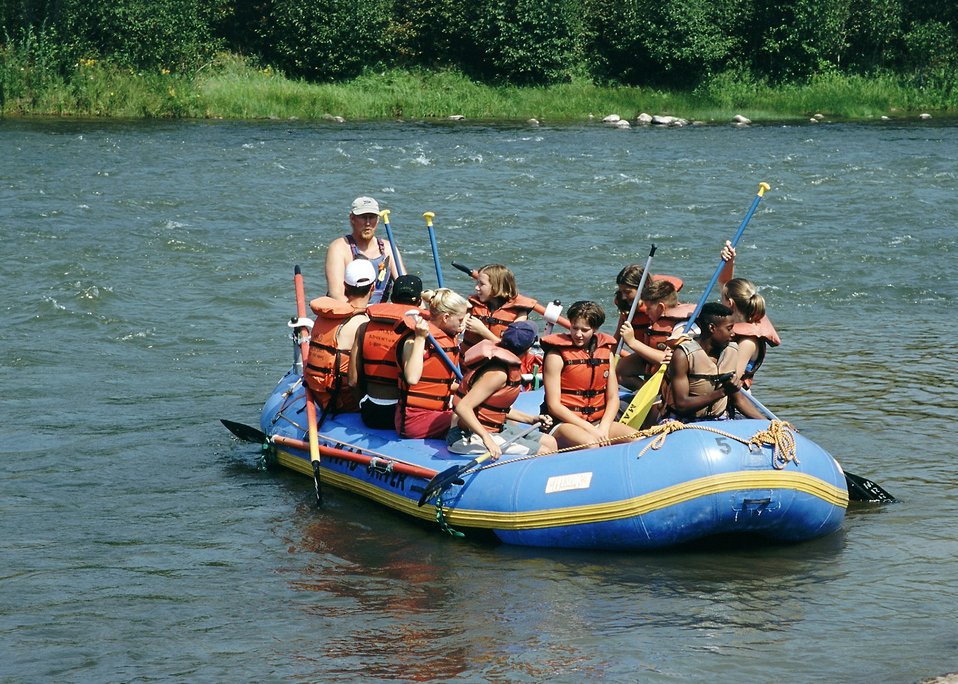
Pumphouse at Luanch